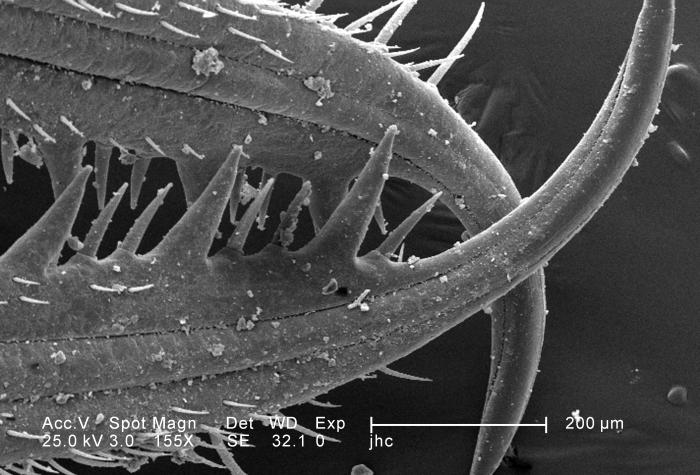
Under a relatively-low magnification of 155X, twice that of PHIL 11804, this scanning electron micrograph (SEM) revealed the ultrastructural features found on the ventral exoskeletal surface of this larval-staged antlion's mandibles. This larva is sometimes referred to as a 'doodlebug', because of the trails it leaves in the soft sand as it hunts for prey. This arthropod, i.e., jointed legs, undergoes dramatic morphologic changes when it metamorphoses into a beautiful flying antlion lacewing.